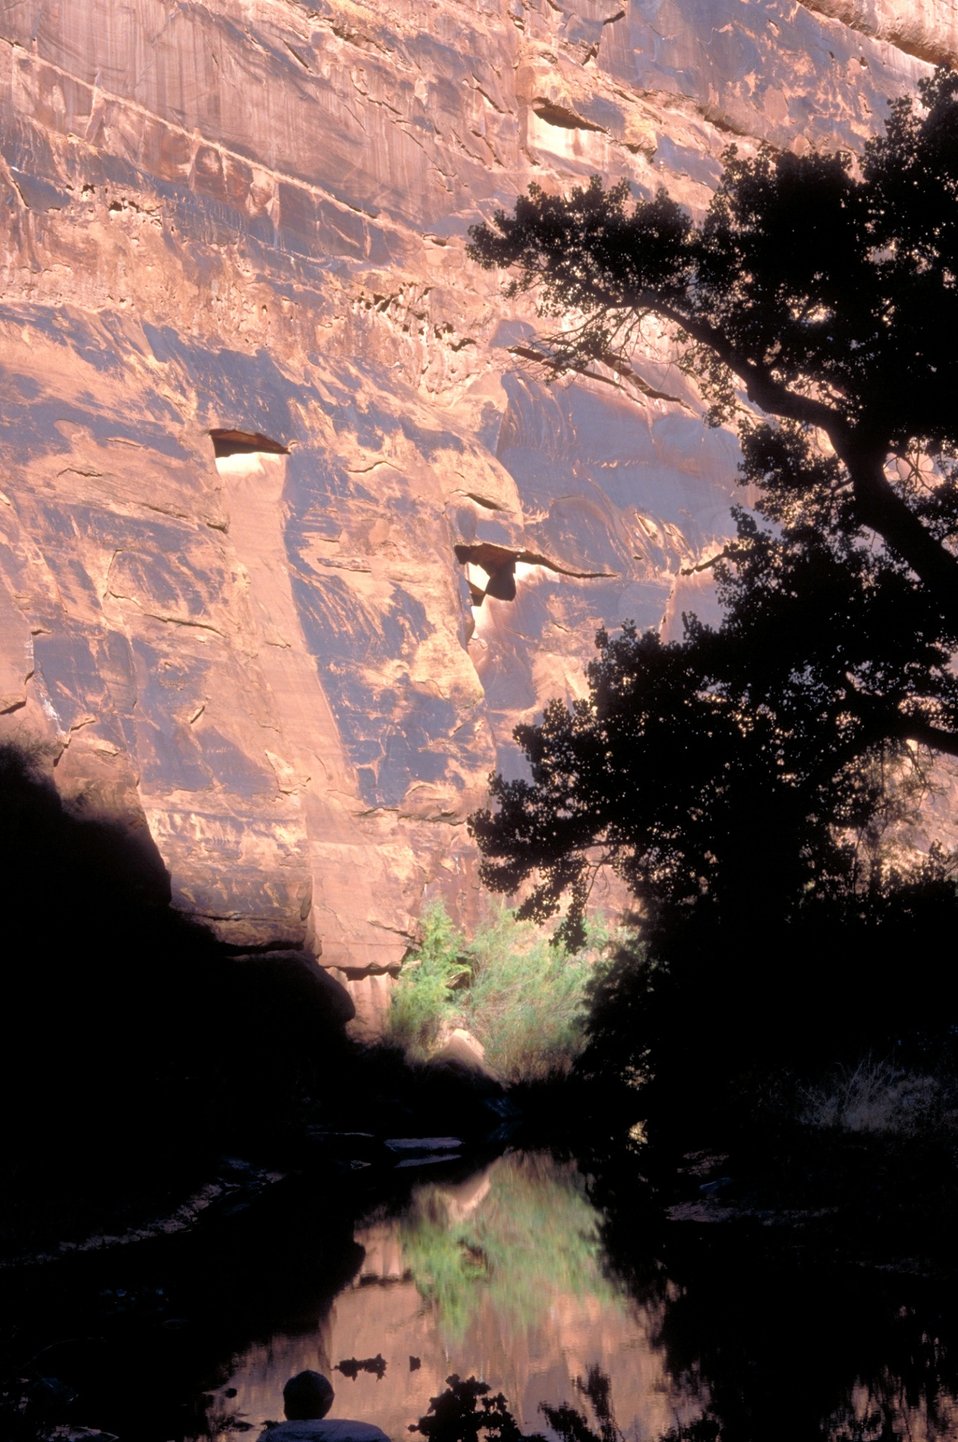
Pool and slickrock in Hunter Canyon near Moab, Utah.